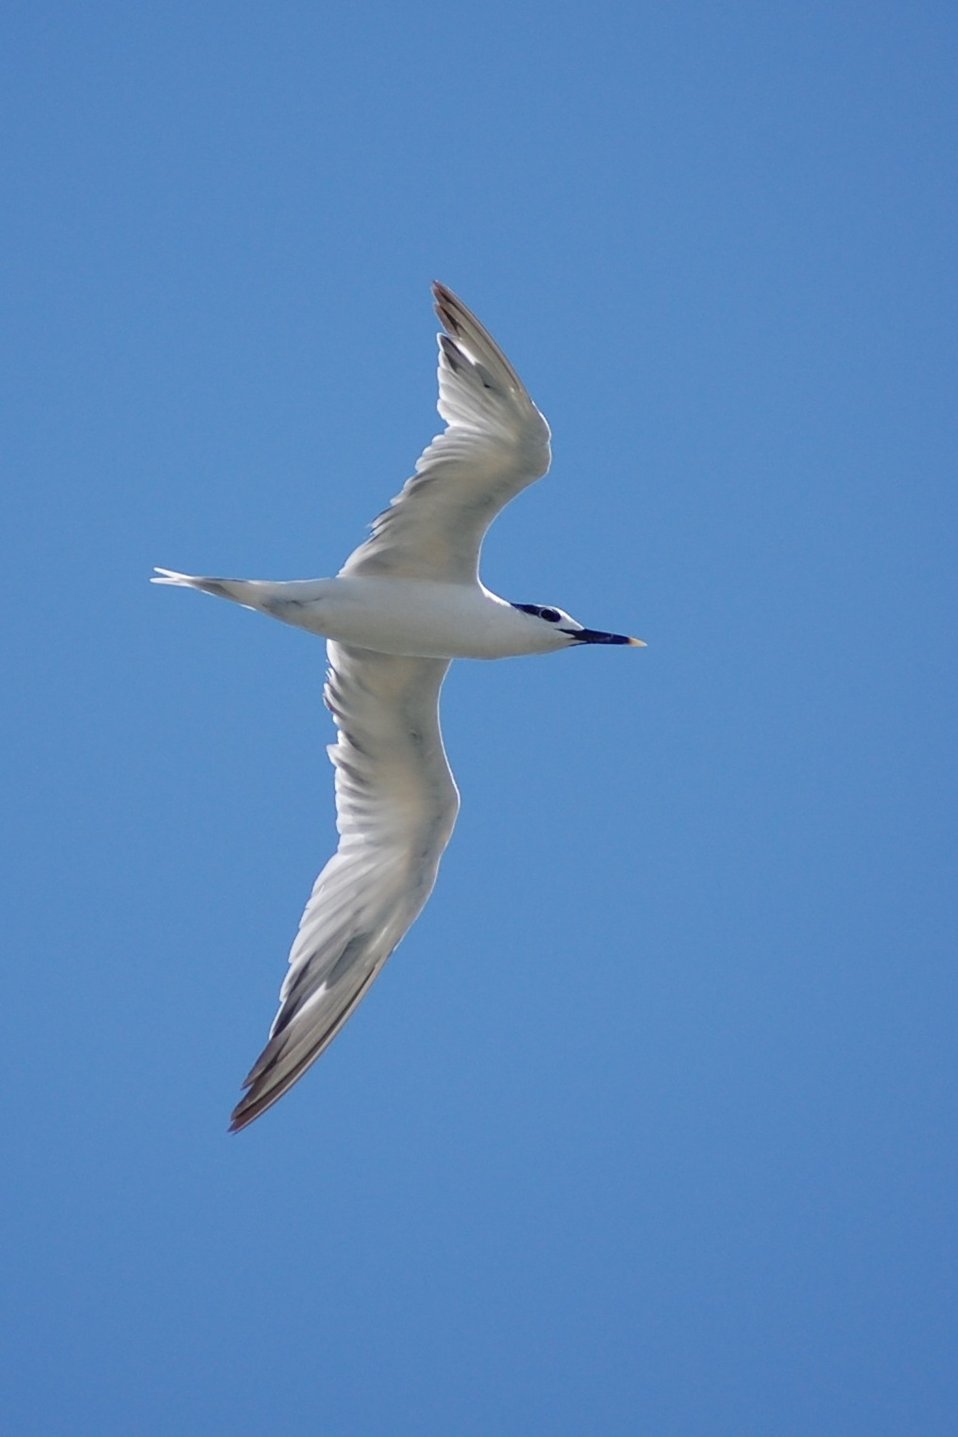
Tern in flight